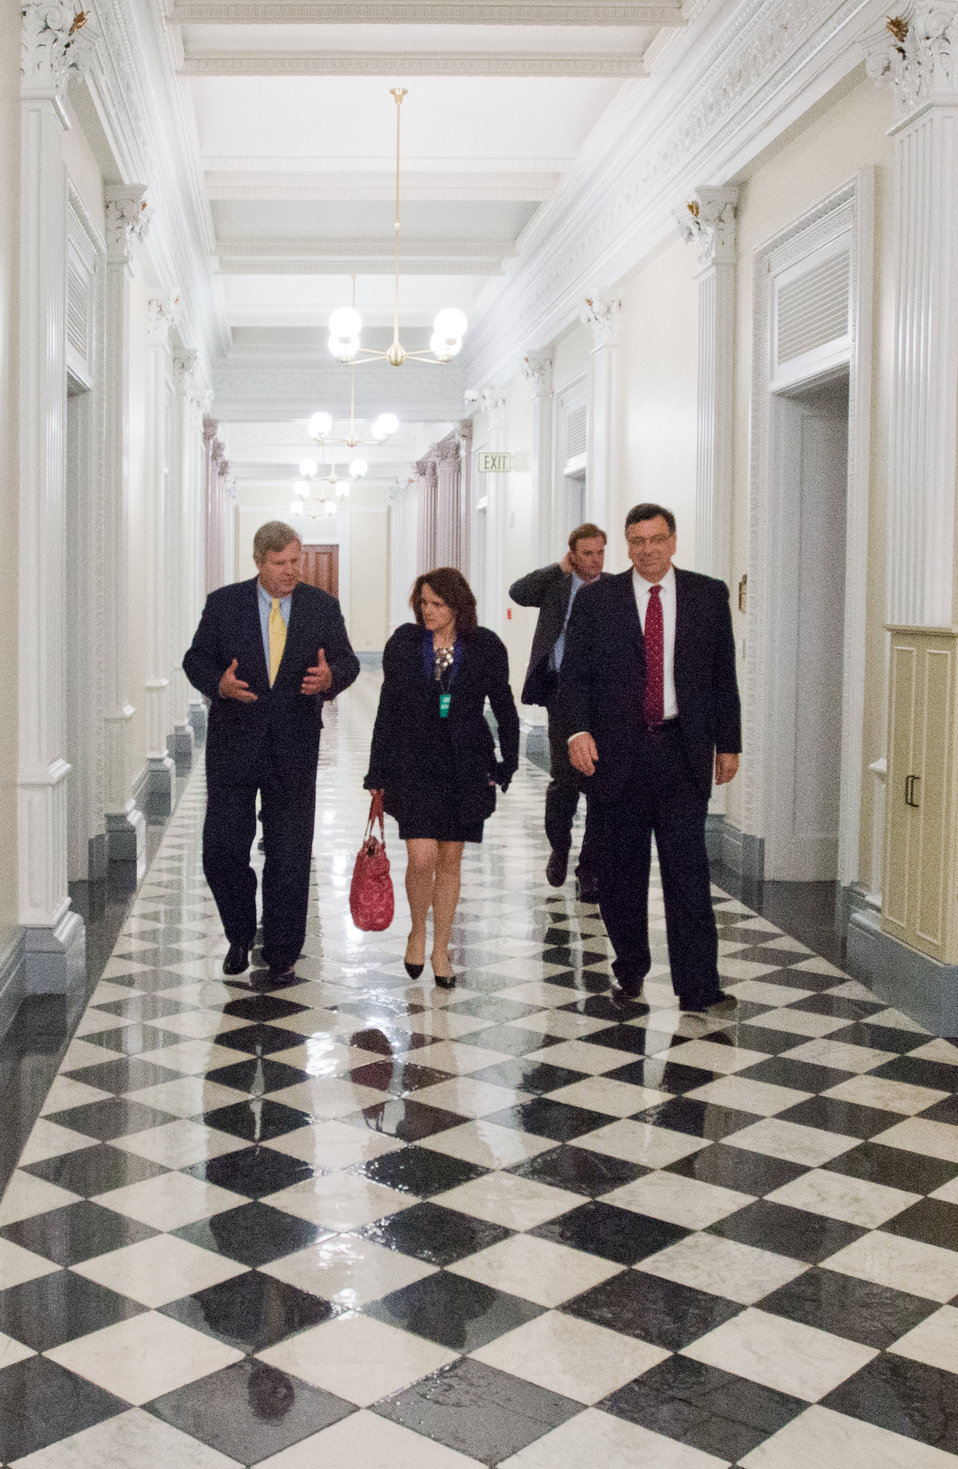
(L to R) Agriculture Secretary Tom Vilsack talks with Dairy Management Inc. Strategic Initiatives Vice President Christina McDermott and Innovation Center for U.S. Dairy Chief Executive Officer (CEO) Tom Gallagher on their way to a conference call with news media at the White House in Washington, D. C. on Wednesday, Apr. 24, 2013 following the signing of a Memorandum of Understanding (MOU) at the Innovation Center For U.S. Dairy Sustainability Council Meeting. The objectives of the MOU are to increase the construction of anaerobic digesters and explore innovative ways to use products previously considered waste streams from dairy production, processing and handling.